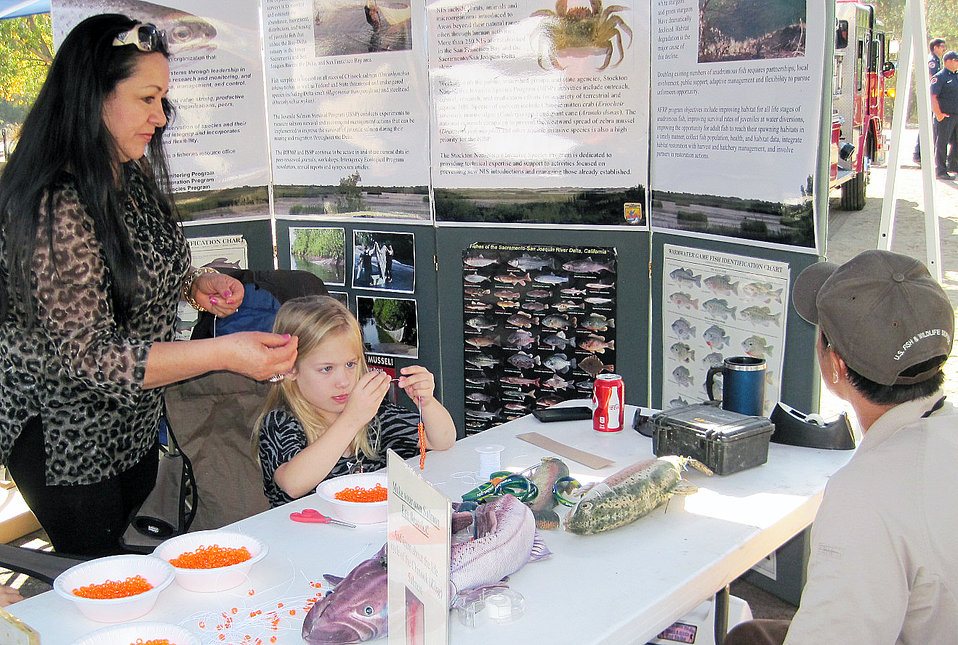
Celebrating the salmon – 2013 Salmon Festival at Stanislaus River Parks

Young visitors were invited to make a bracelet of beads resembling salmon eggs while hearing about the life cycle of the salmon from U.S. Fish and Wildlife Service personnel during the fifth annual Salmon Festival at Stanislaus River Parks Oct. 26, 2013. Young fans of the Chinook salmon celebrated the famous fish in drawings, paintings and hand-painted t-shirts at the U.S. Army Corps of Engineers facility in Knights Ferry, Calif.